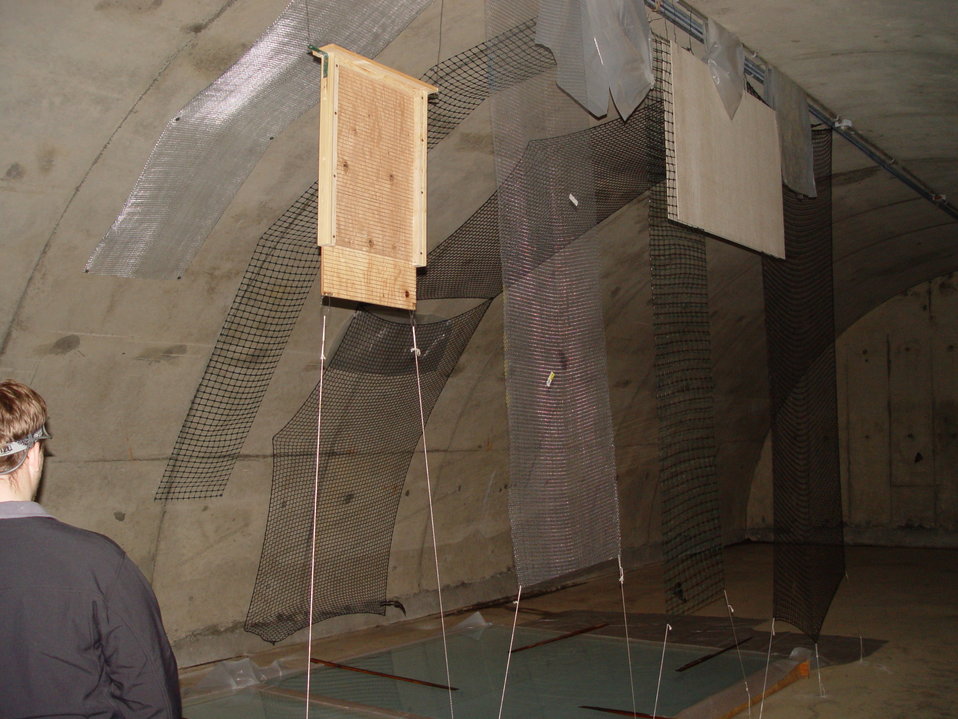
Interior of bunker with roosting substrate